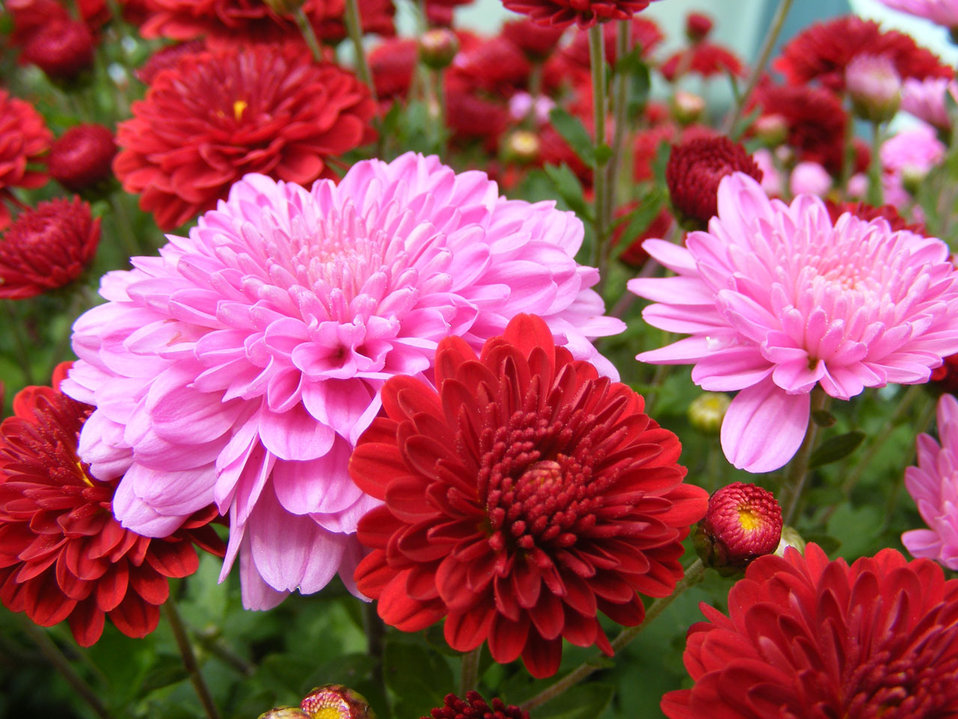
Mums

Digital color photo of chrysanthemums.